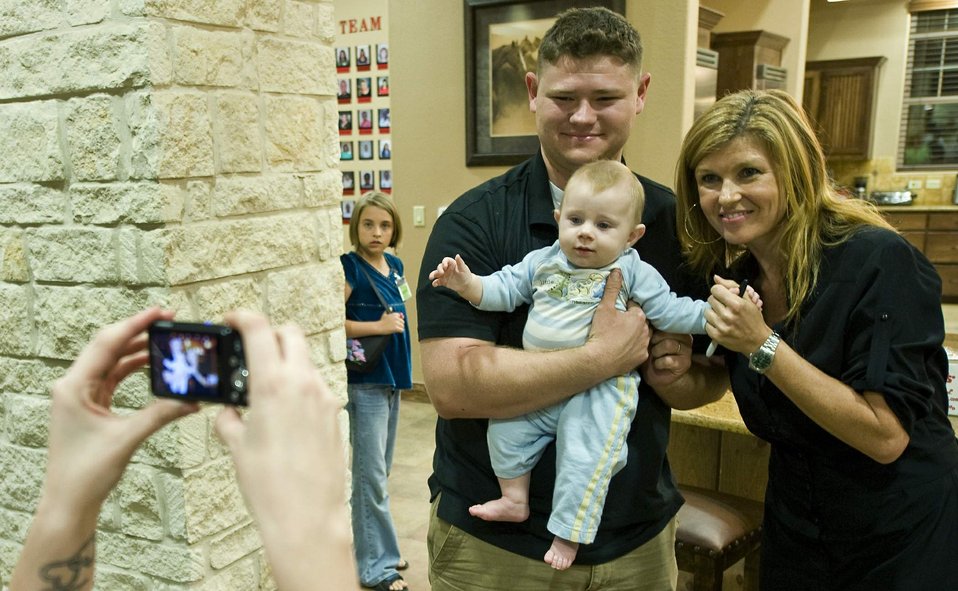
'Friday Night Lights' actors thank wounded warriors